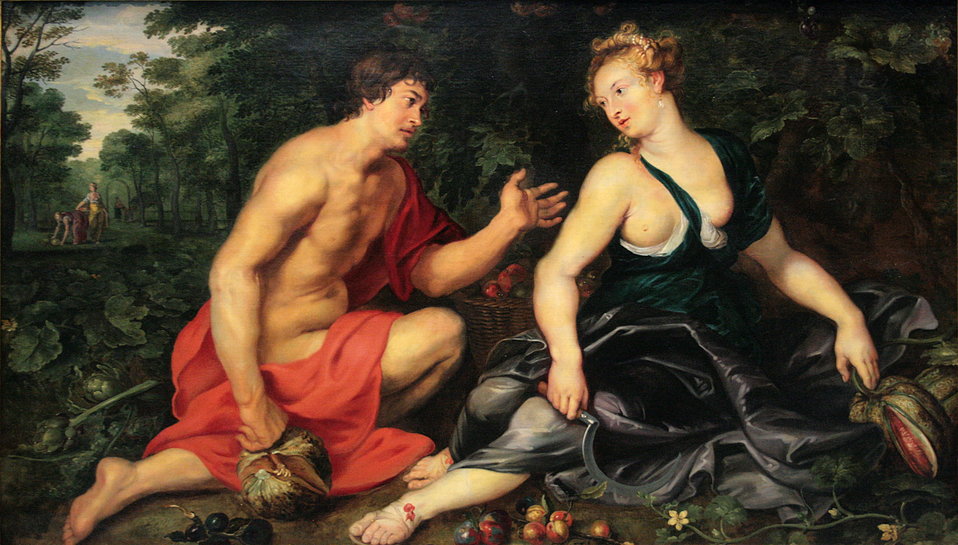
0 Vertumne et Pomone - Peter Paul Rubens (1617-1619)